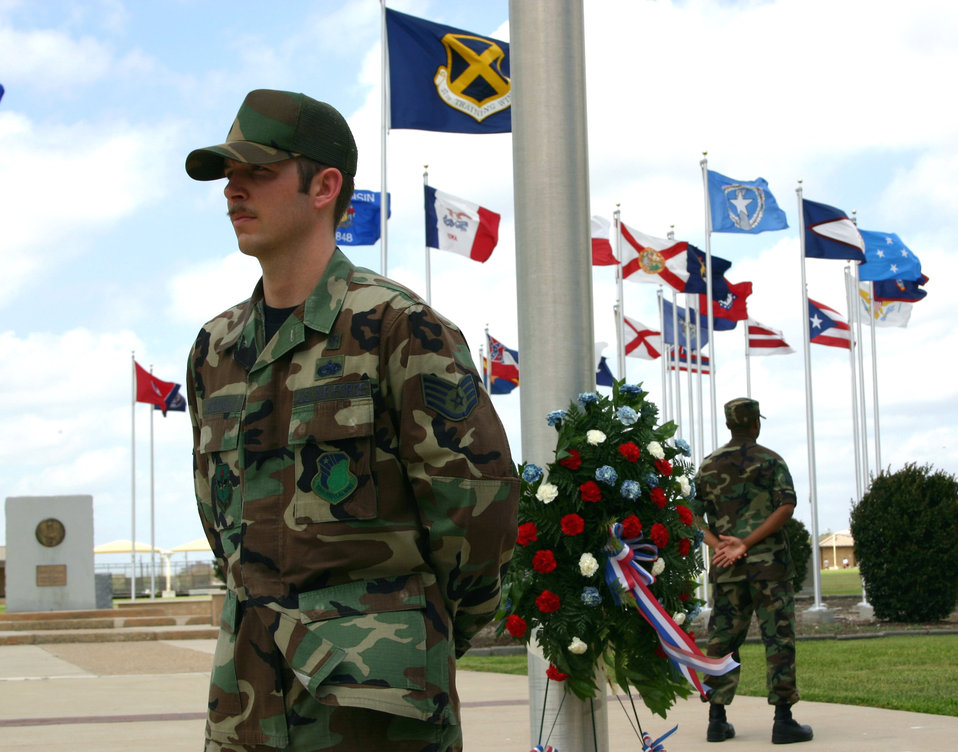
Silent vigil

Staff Sgt. Aaron Bowman stands at parade rest in silent vigil along with other members of the 59th Medical Wing's physical medicine flight at Lackland Air Force Base, Texas, on Friday, May 26, 2006. The vigil, part of the base's Memorial Day observances, honored the contributions of servicemembers who are, or were, missing in action or prisoners of war. Each shift stood vigil for 10 minutes during the eight-and-a-half-hour observance.